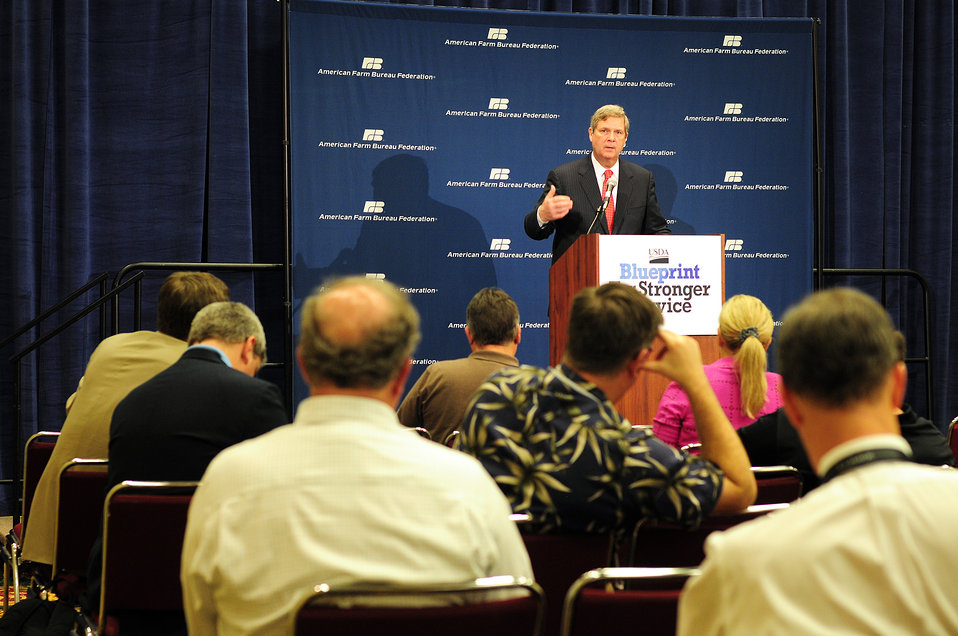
Agriculture Secretary Tom Vilsack presents USDA's Blueprint for Stronger Service, a plan to Increase Efficiency in USDA Operations, on Monday, January 9, 2012 in Honolulu, Hawaii.